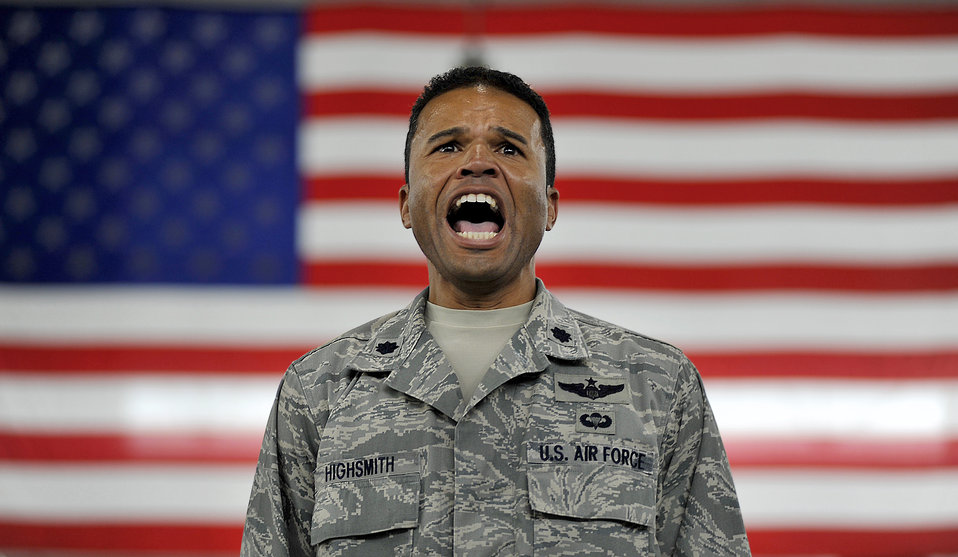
ATTENTION!

Lt. Col. Tom Highsmith issues commands to his unit during the inactivation ceremony June 11, 2010, for the 816th Contingency Response Group at Joint Base McGuire-Dix-Lakehurst, N.J. Colonel Highsmith is the director of operations for the 816th Ground Mobility Squadron.